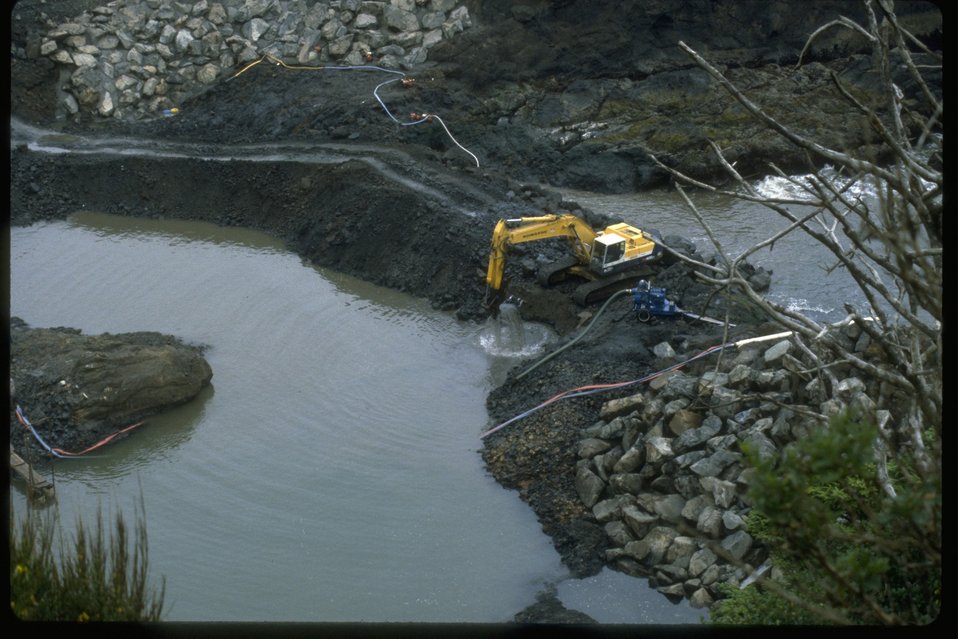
Breaking the Sea Wall during the construction at Quarry Cove.